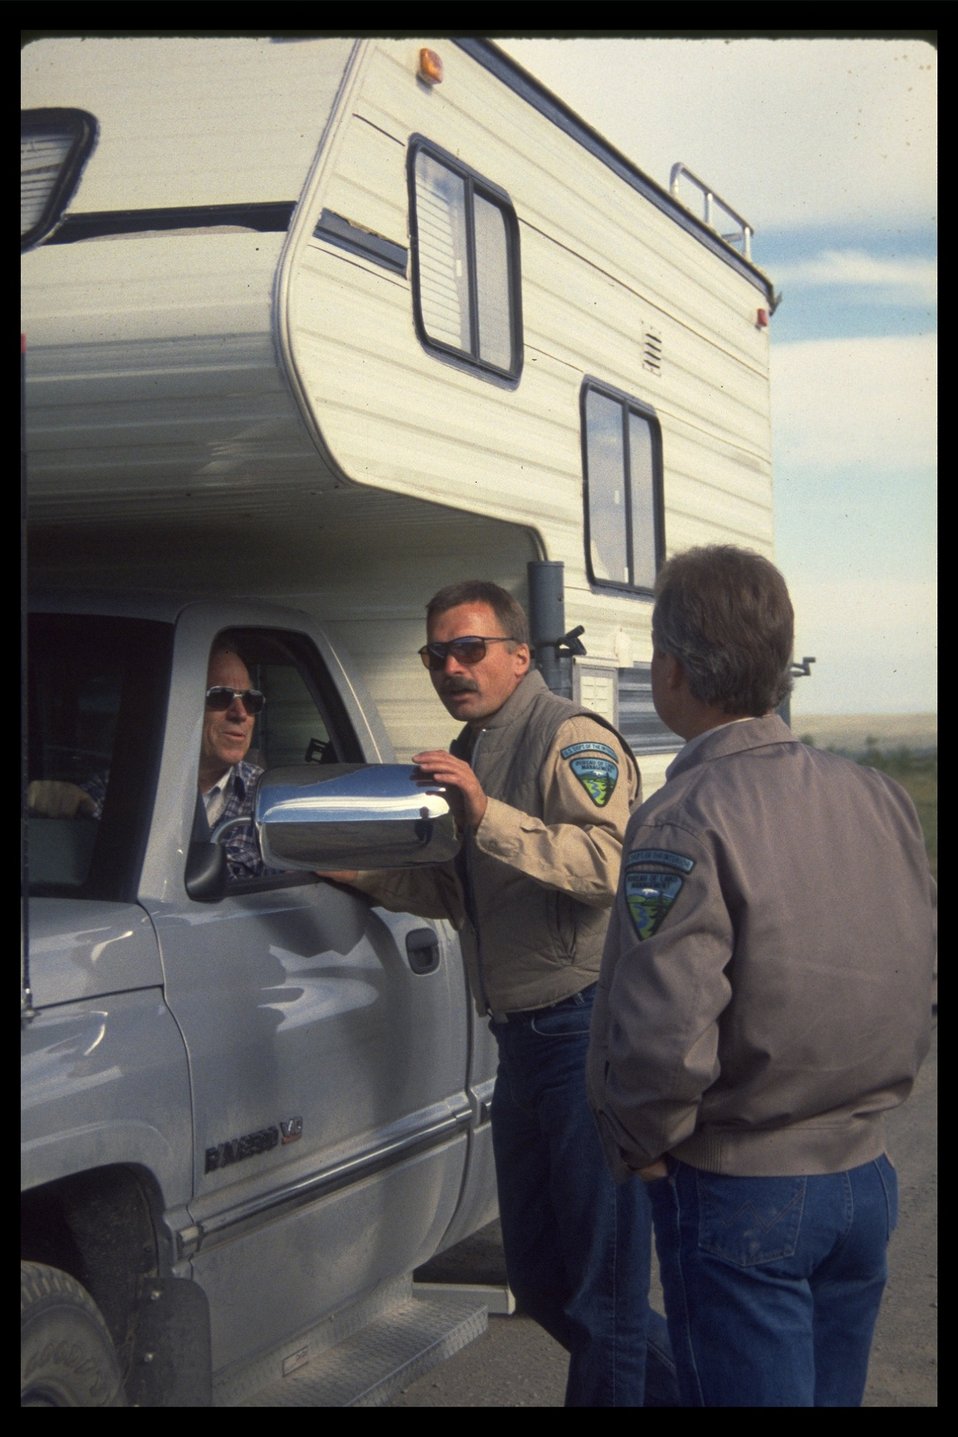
Mark Sherburne, a Steens Mountain Rim Run parking attendant.